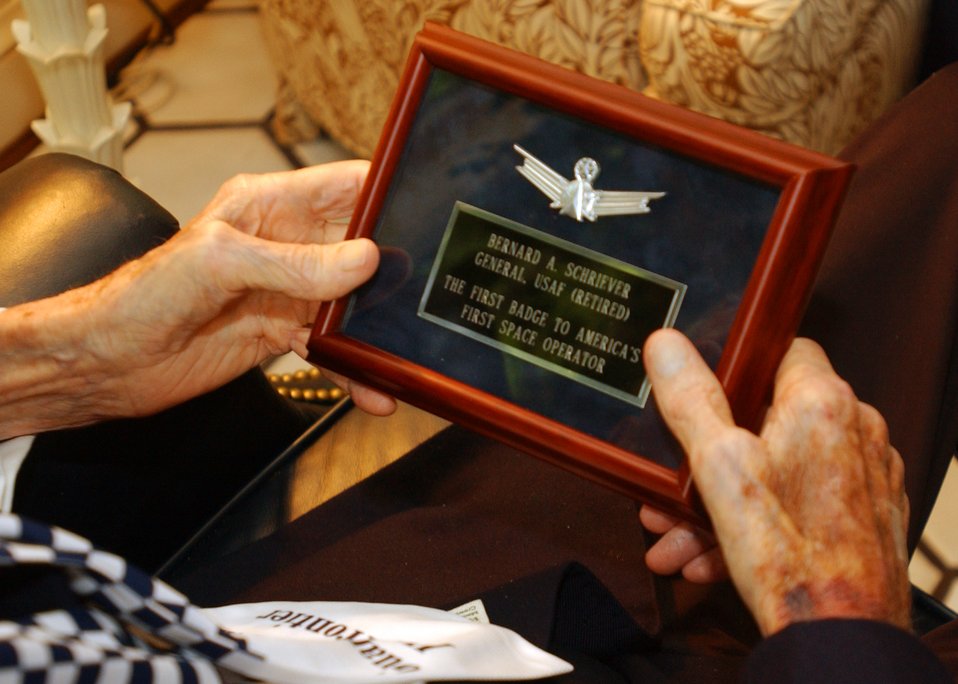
First space badge

Gen. Bernard Schriever receives the first Air Force Space Badge May 25, 2005. General Schriever died June 20, 2005. Falcon Air Force Base became Schriever AFB in his honor June 5, 1998, making it the first base named after a living person.